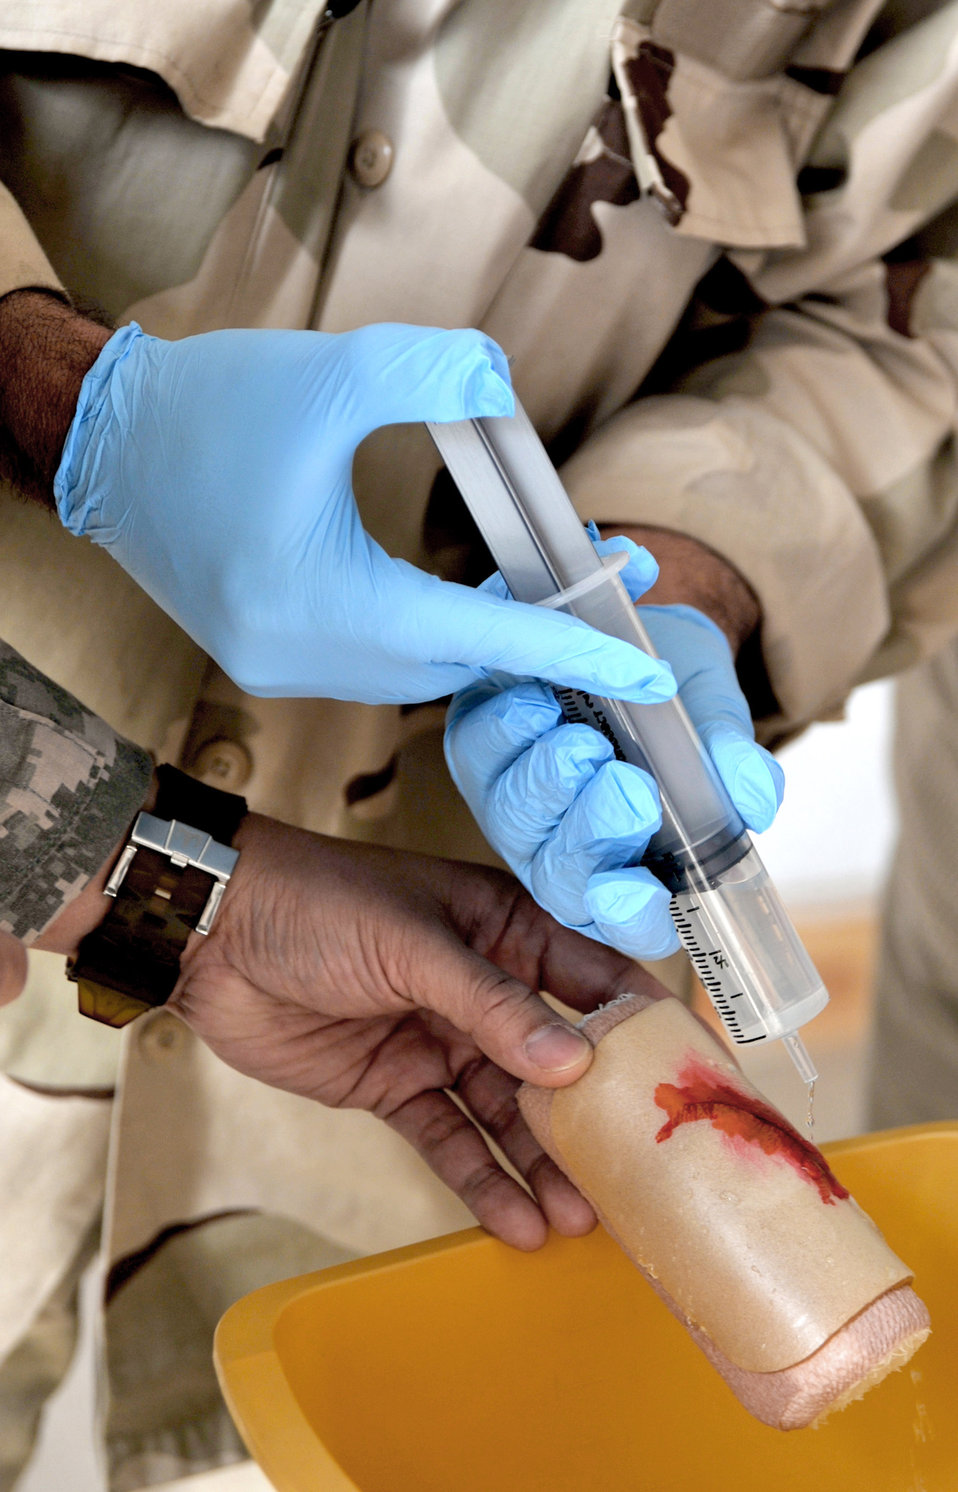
Airmen improve capability of Iraqi medical clinic

An Iraqi airman washes dirt out of an artificial laceration Feb. 23, 2011, at the medical clinic on Ali Air Base, Iraq, during a medical training course. Airmen assigned to the base transition team here have helped improve the clinic's ability to meet the needs of the Iraqi air force by providing $200,000 in essential medical equipment, increasing storage capacity and coordinating monthly self-aid buddy care training.